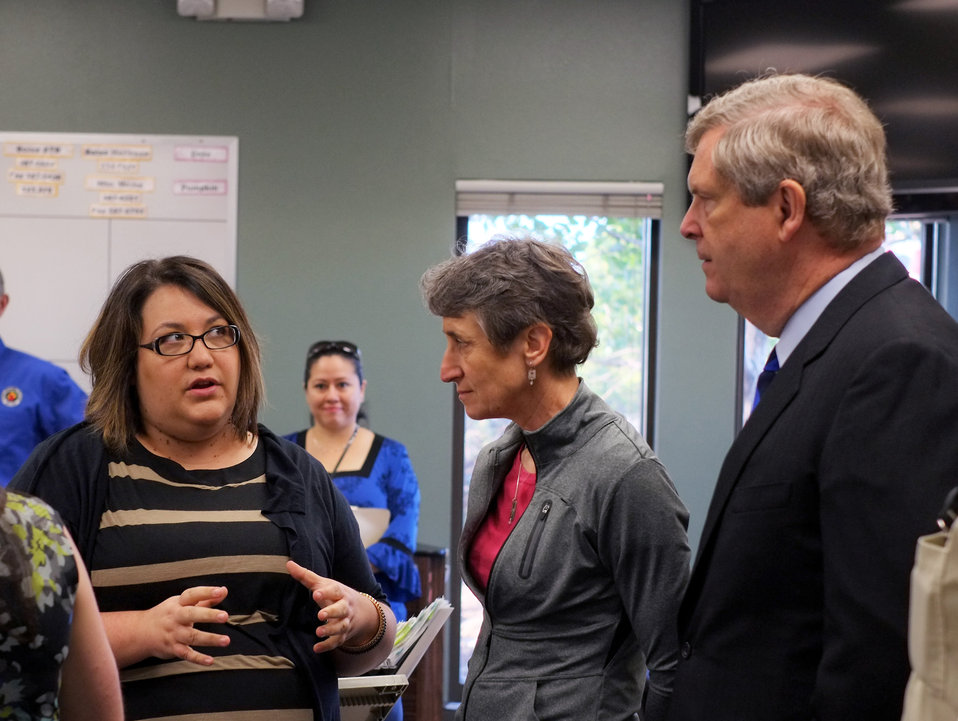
Interior Secretary Sally Jewell and Agriculture Secretary Tom Vilsack listen to an employee at the National Interagency Fire Center (NIFC) in Boise, ID on Monday, May 13, 2013. Agriculture Secretary Vilsack and Interior Secretary Jewell provided an outlook for the upcoming fire season and outlined the federal government’s efforts to ensure collaboration in protecting Americans from wildfire.